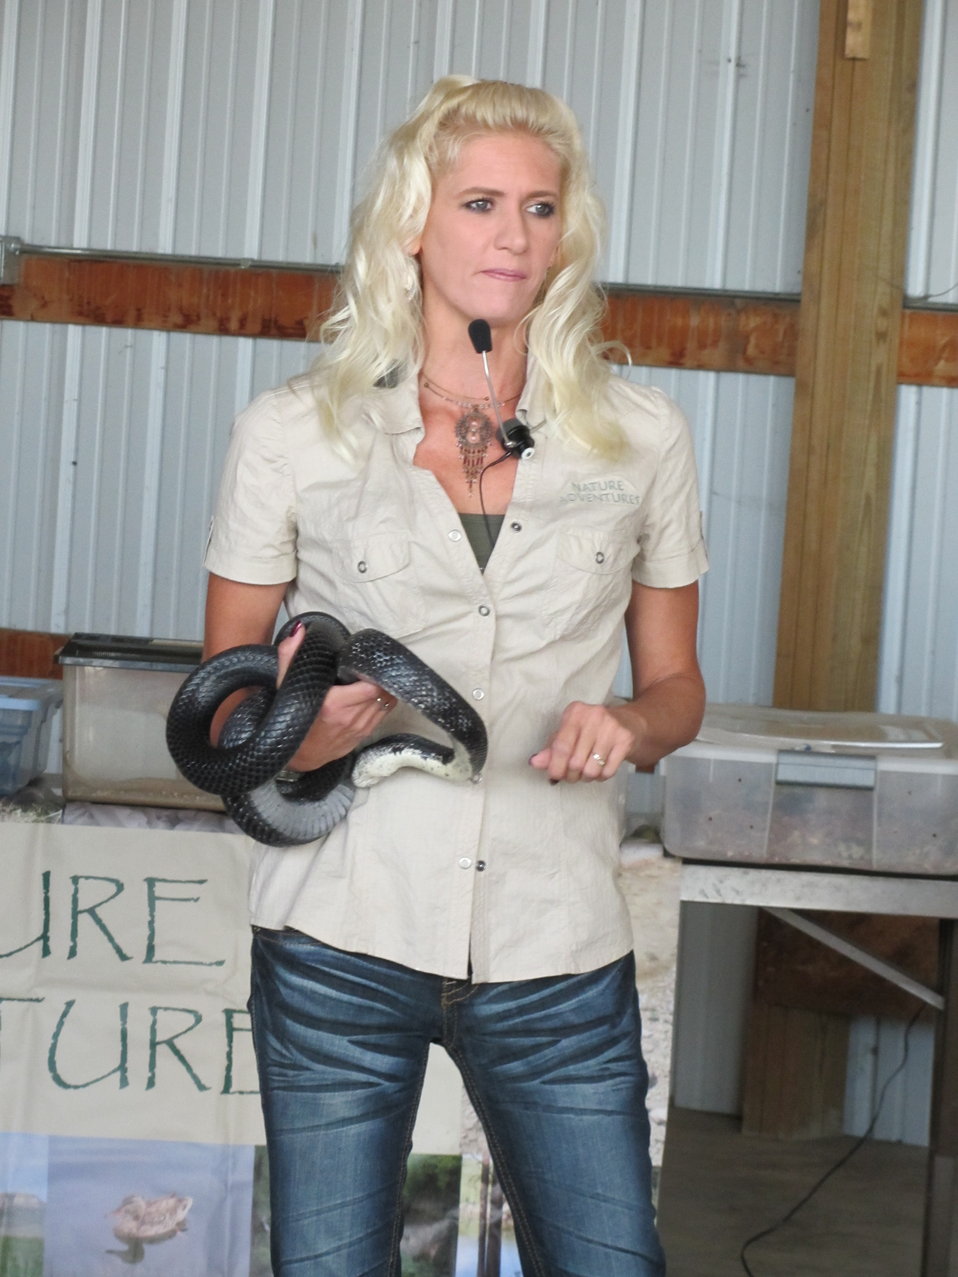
2011 Huron Prairie Fest